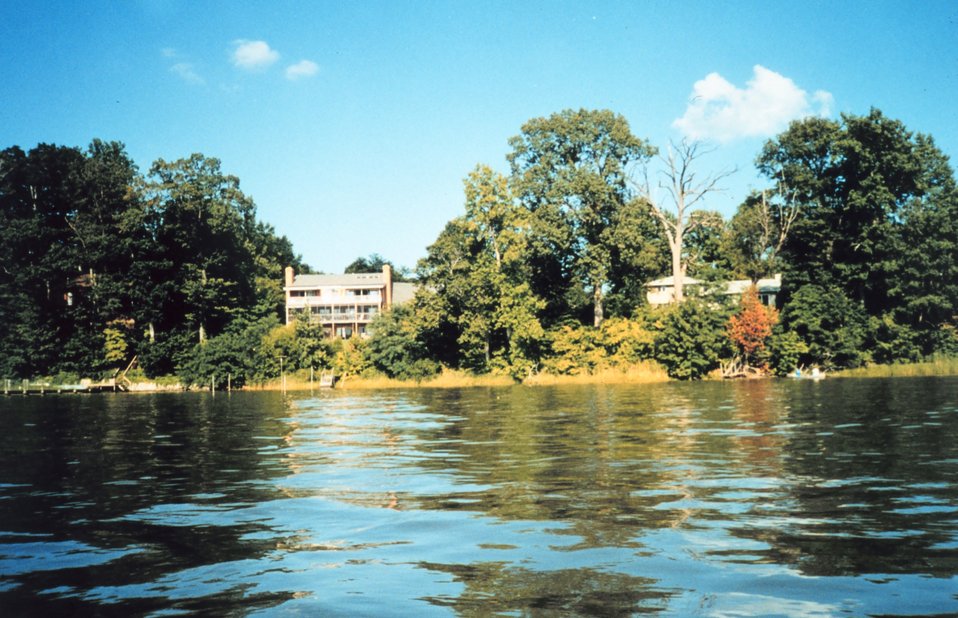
Pleasant homes grace the shoreline